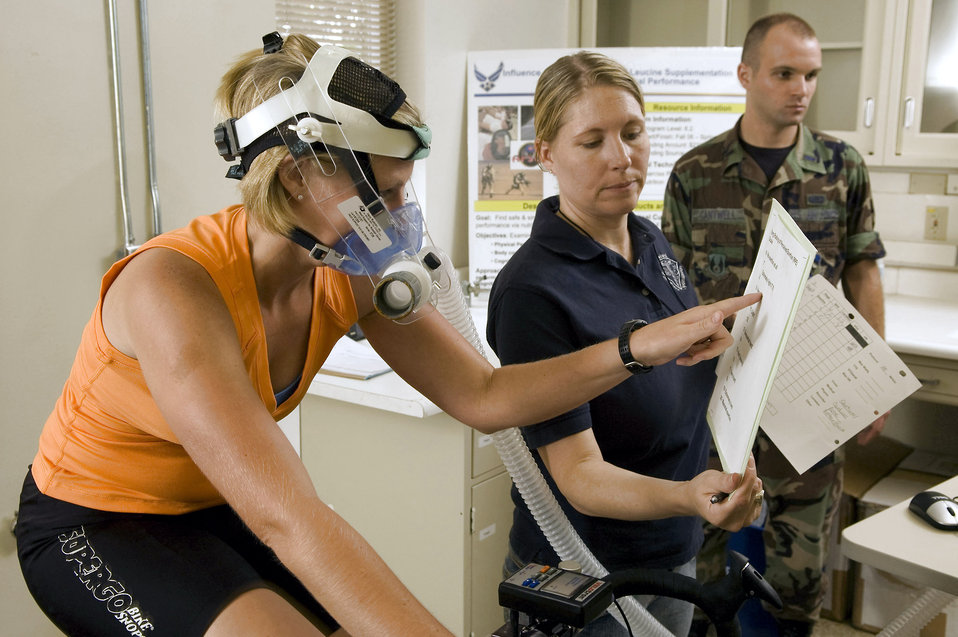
Studying human performance

Kassi Micak participates in the citrulline malate study conducted by Air Force Research Laboratory officials Aug. 19 at Brooks City-Base, Texas. Her perceived level of exertion is evaluated while Tech. Sgt. Darci Rose, an aerospace physiology technician, records exertion, lactates, VO2 max and heart rate during the study. Ms. Micak, a competitive cyclist based in San Antonio, volunteered for the study.